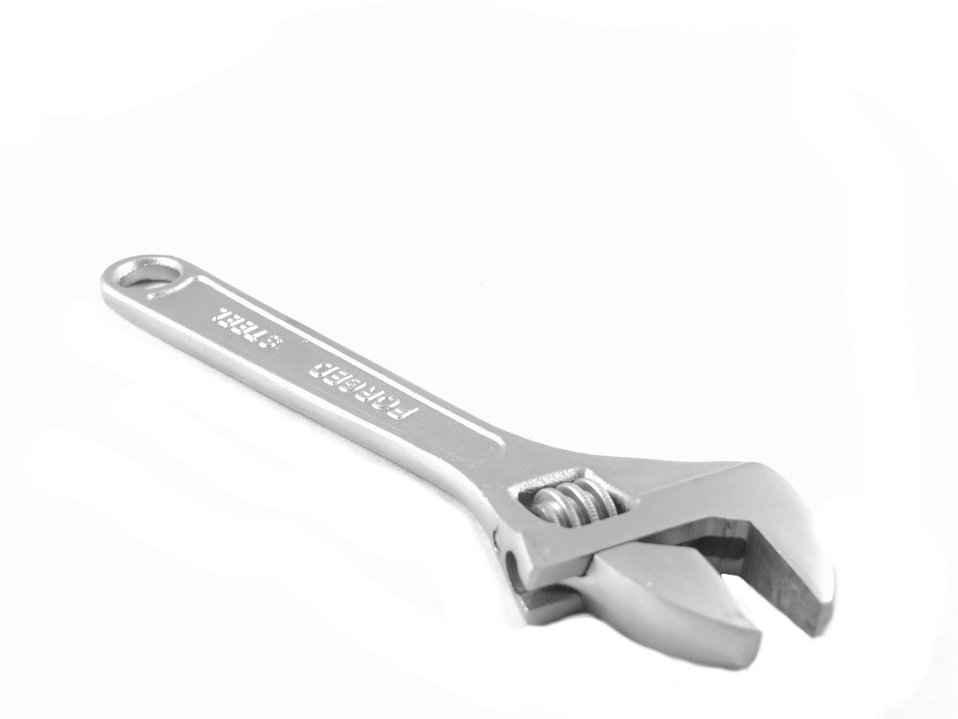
Spanner on white background.